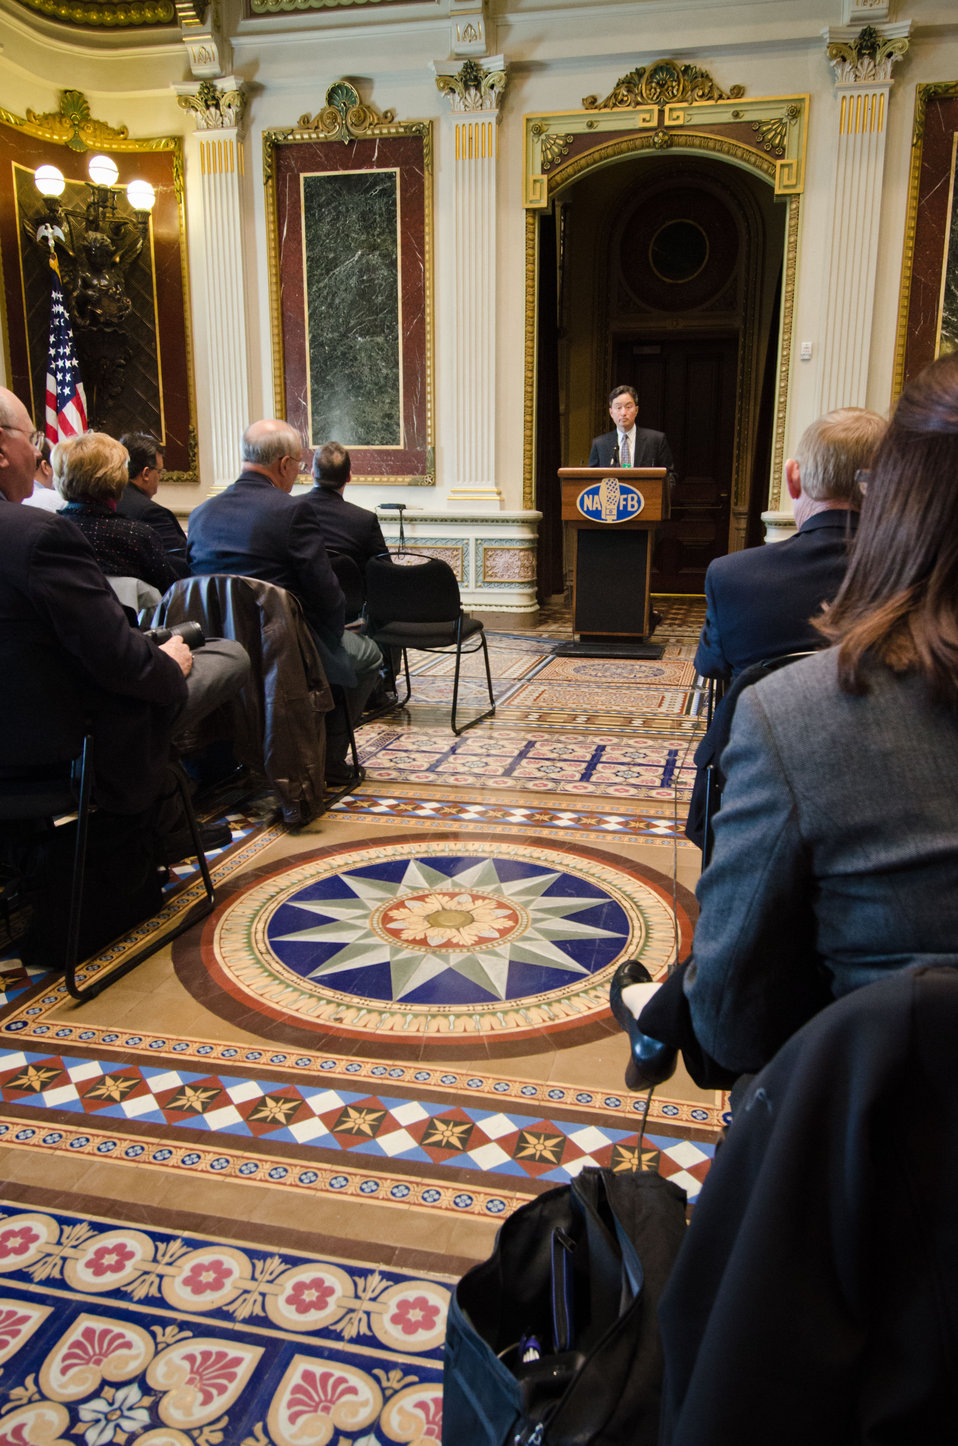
Deputy Under Secretary Food Safety Brian Ronholm spoke about food safety at the spring National Association of Farm Broadcasters (NAFB), “Washington Watch” member retreat in Washington, D.C. This year the meeting was held in the Eisenhower Executive Office Building, Indian Treaty Room Tuesday, April 24, 2012 featuring United Sates Department of Agriculture and Obama Administration officials. This opportunity provides an occasion to highlight efforts to rebuild and revitalize rural America, including efforts for the agricultural community. NAFB is the recognized and trusted source of agricultural and rural lifestyle information for America with approximately 200 members who broadcast via radio in nearly every state in the country.